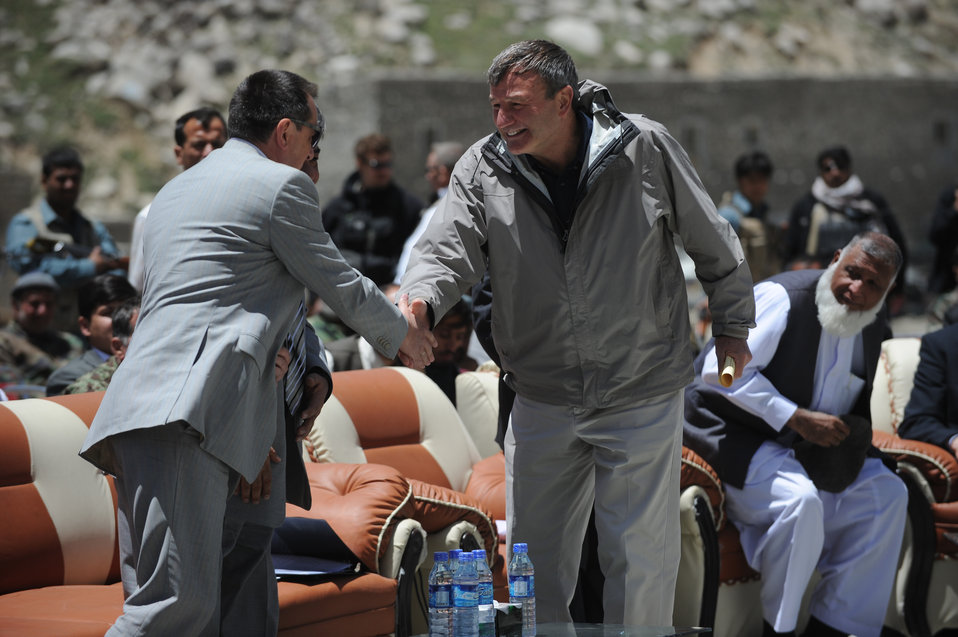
U.S. Ambassador Karl W. Eikenberry attends a ceremony to mark the beginning of renovations at the Salang Tunnel on the border of Parwan and Baghlan Provinces, Afghanistan, on Wednesday, June 15, 2011. (S.K.Vemmer/Department of State)